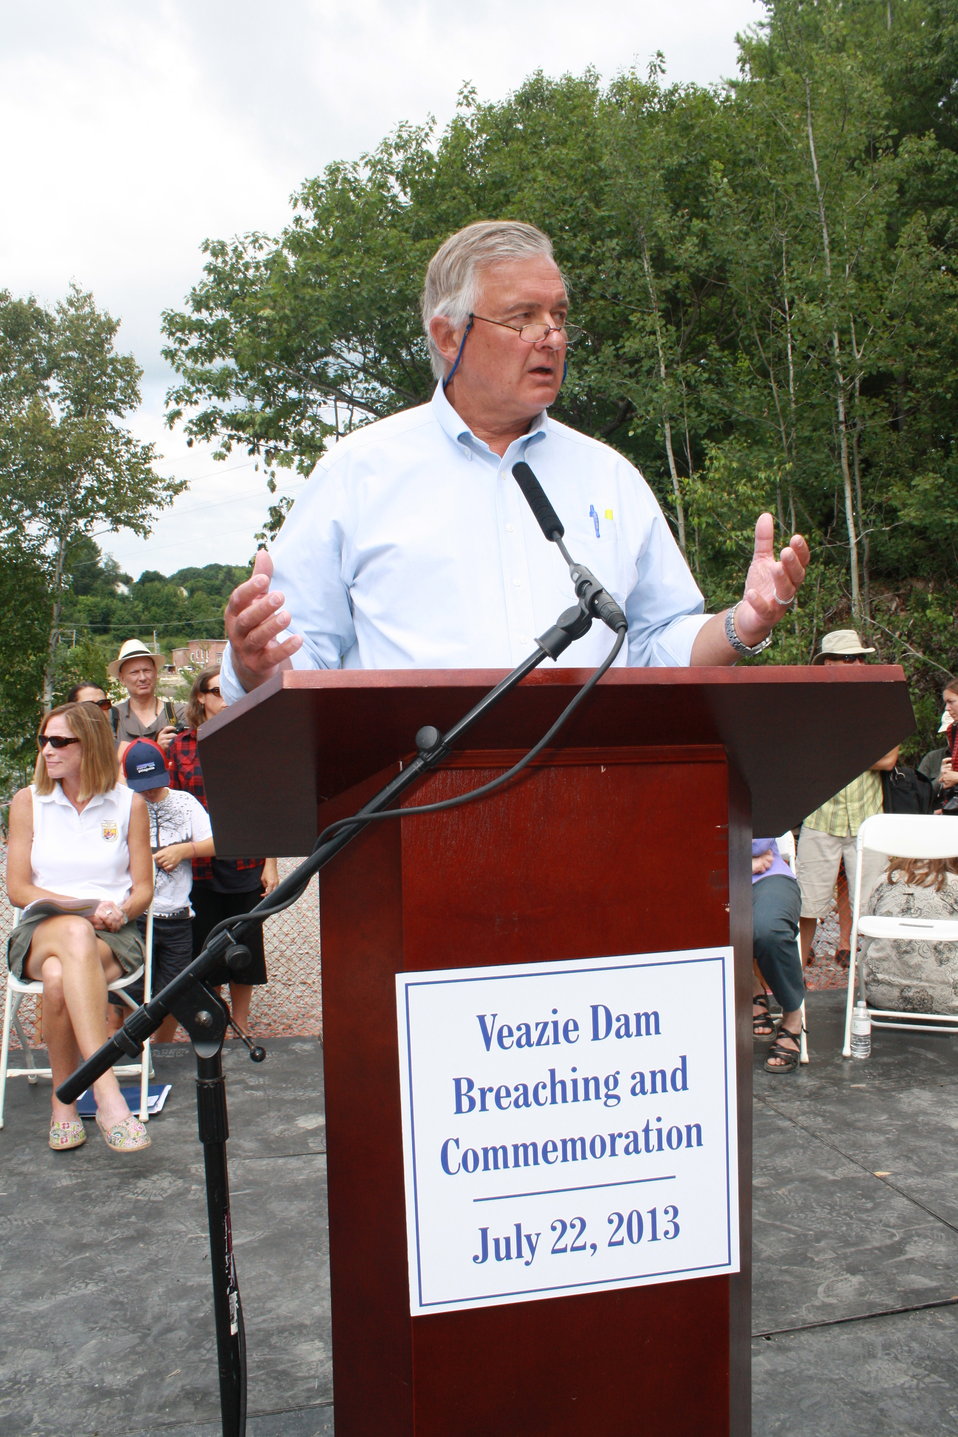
Veazie Dam Removal

John Bullard, Regional Administrator of the National Oceanic and Atmospheric Administration.